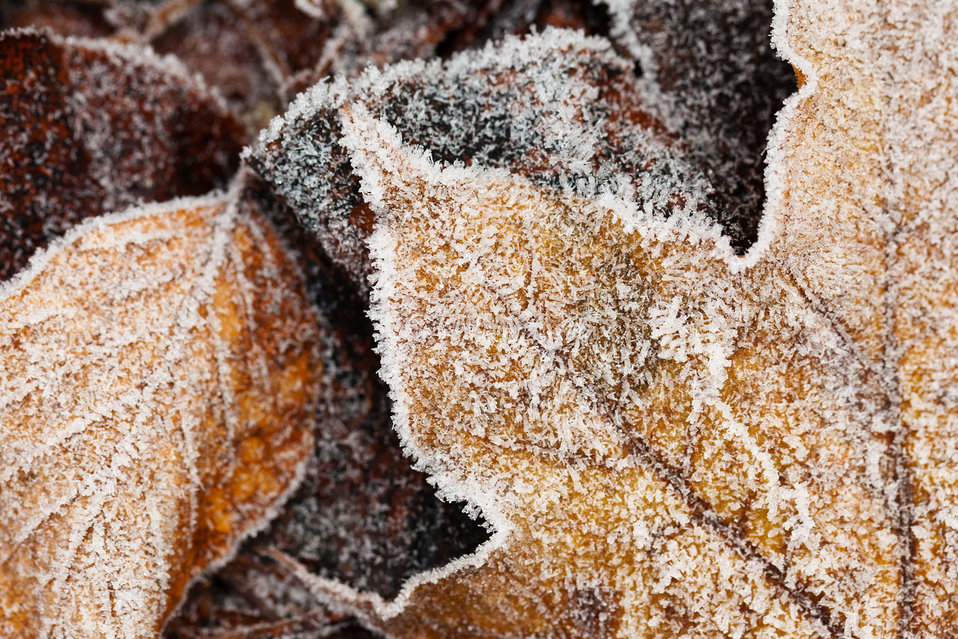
Frost on leaves

Hoar frost on brown leaves.